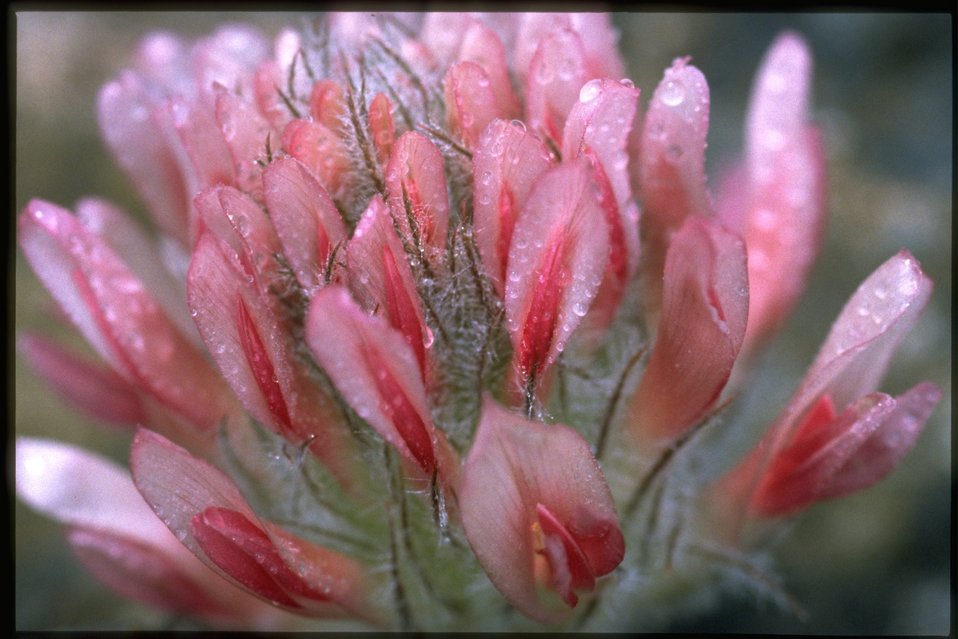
Closeup shot of Big-headed clover, Trifolium macrocephalum.